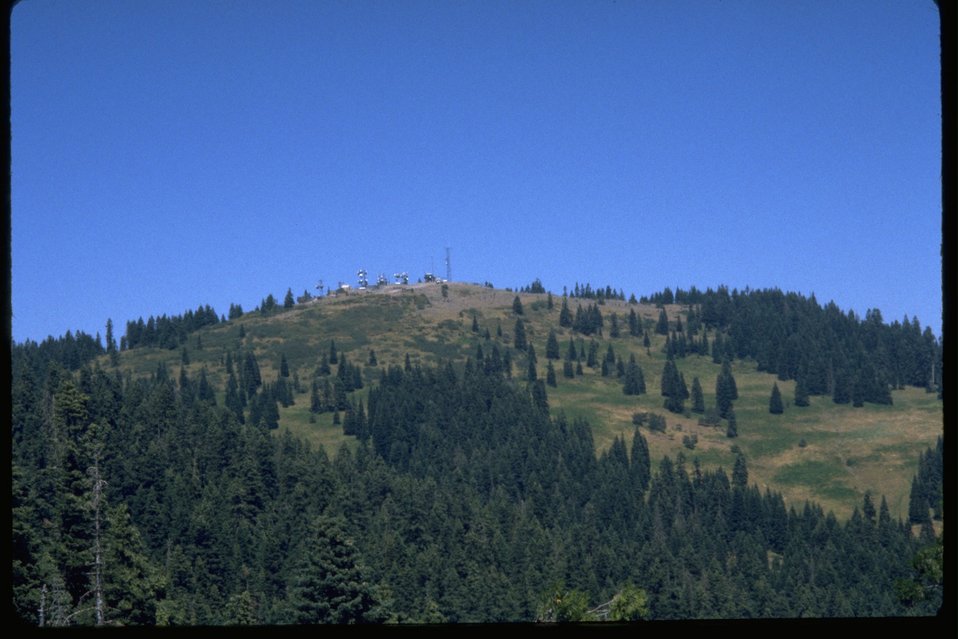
Soda Mountain and communications equipment on Soda Mountain Summit.